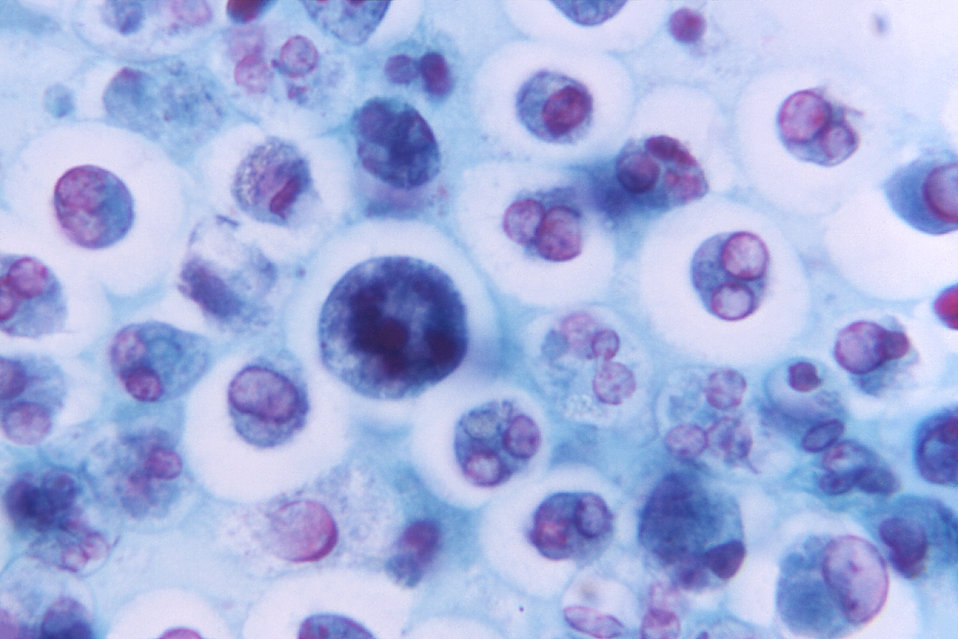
Magnified 1125X, this photomicrograph revealed the presence of a macrophage containing a number of phagocytized red blood cells (RBCs).